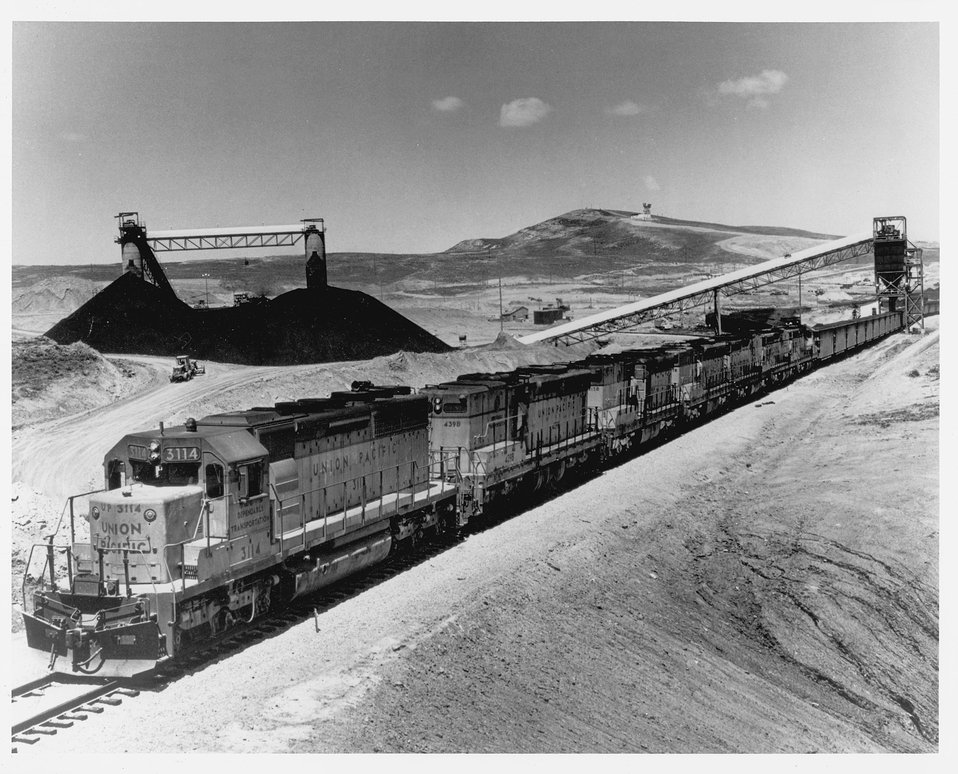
Semino Mine No. 2 tipple is seen behind the Union Pacific train, its 100 cars being loaded with a total of 10,000 tons of Hanna, WY coal for a trip to utilities in the midwest.
c.1976